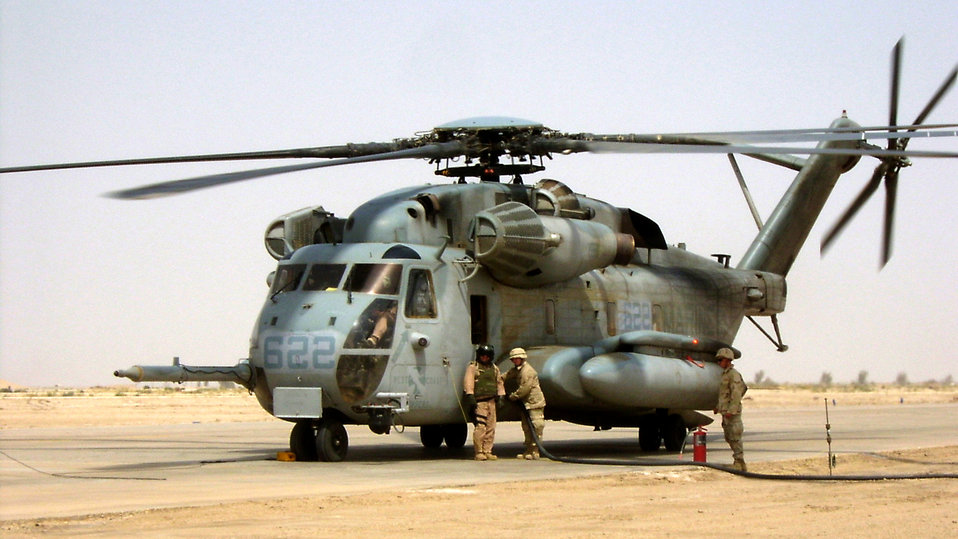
Working together

TALLIL AIR BASE, Iraq -- Airman 1st Class Michael Brown (center) refuels a U.S. Marine CH-53E under the watchful eye of and aircrew member as Airman 1st Class Shaun Chadwick(right) stands fire guard. The helicopter is just one of many aircraft Airmen here service. They are assigned to the U.S. Army's 439th Petroleum, Oil and Lubricant Forward-Area Refueling Point.